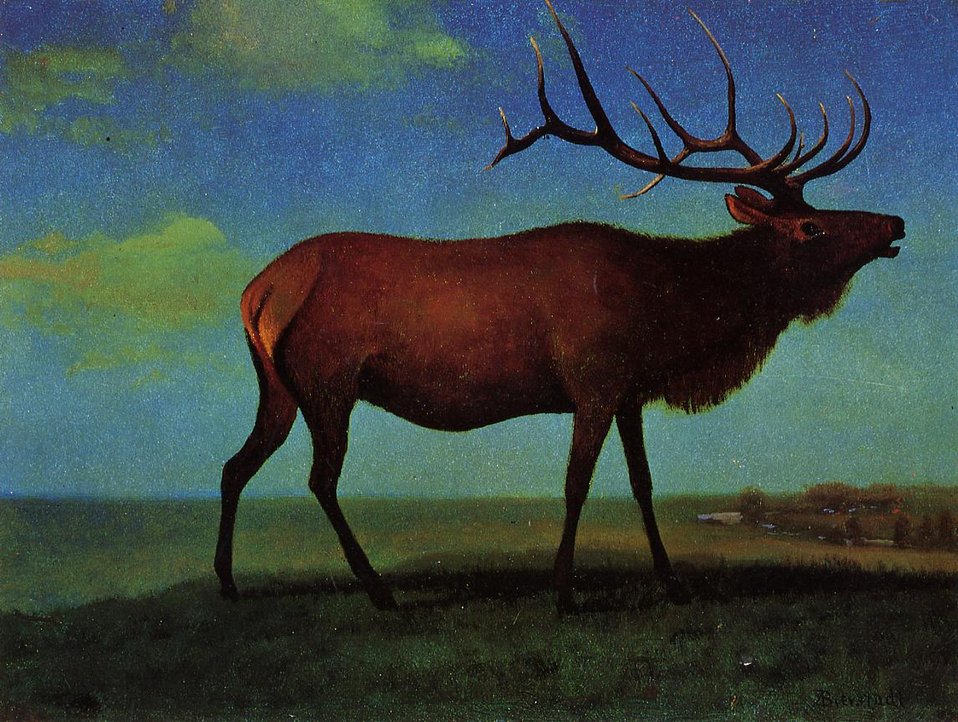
Bierstadt Albert Elk